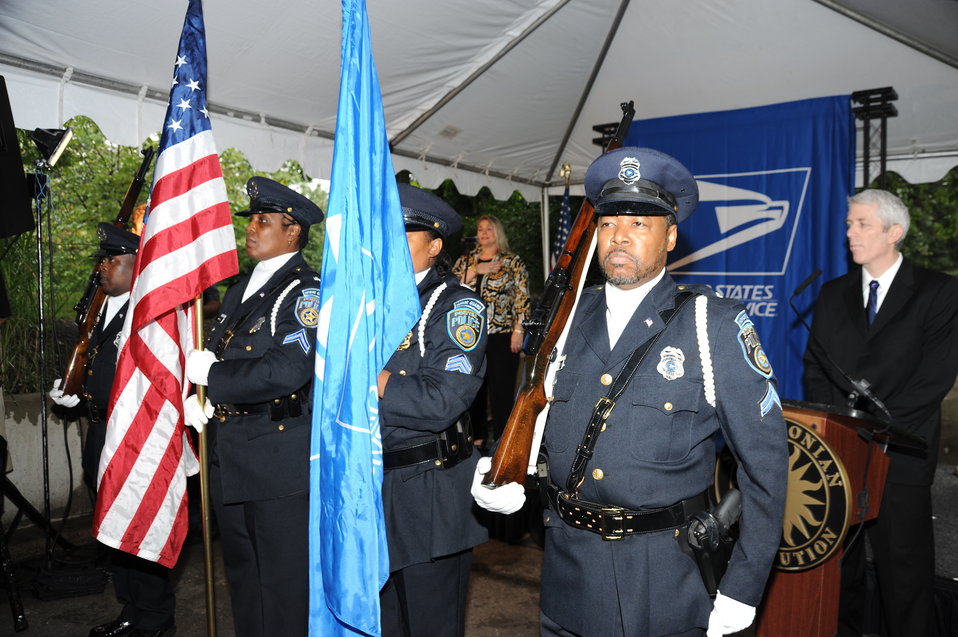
Save Vanishing Species Stamp First Day of Issue